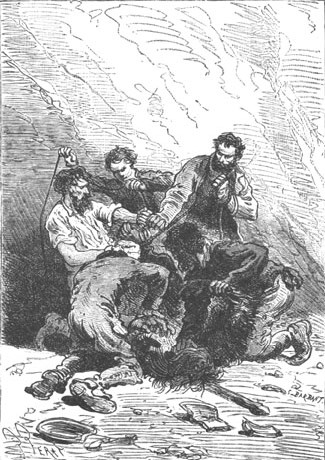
An illustration from Jules Verne's novel 'The Mysterious Island' (1873-74) drawn by Jules Férat. Polski: Ilustracja powieści Juliusza Verne'a 'Tajemnicza wyspa' (tytuł przekładany także jako: Wyspa tajemnicza, 1873-74) autorstwa Julesa Férata. Français : Jules Verne: 'L’Île mystérieuse' (1873-74), dessins par Jules Férat. Orginal description from the book: Français : Le singe fut terrassé et garrotté.